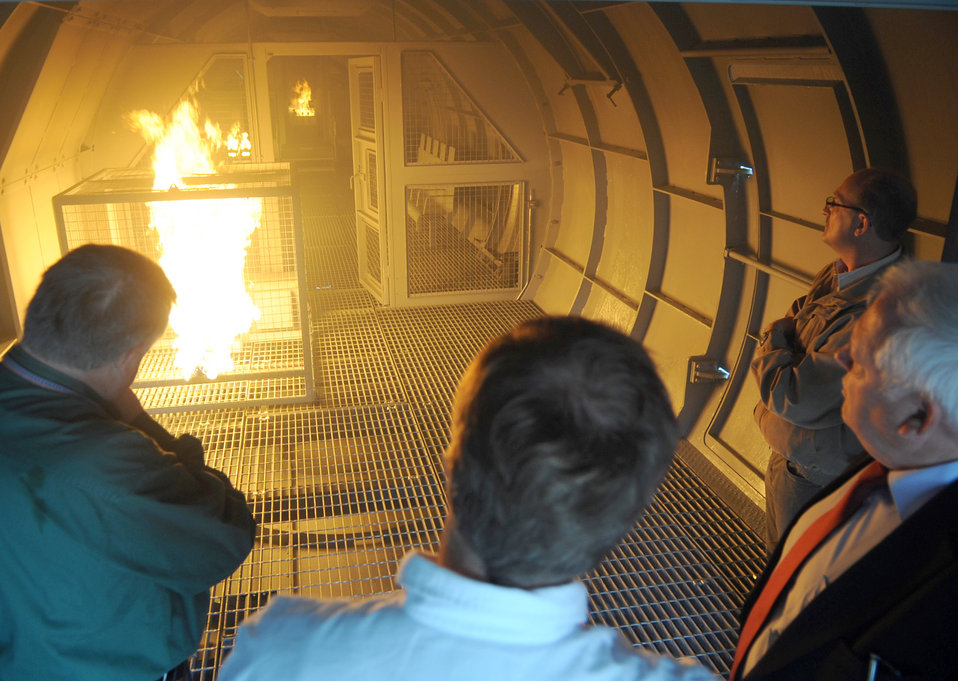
Aircraft Fire Training Site

Construction team members and fire trainers view a new aircraft fire training burn site Sept. 9, 2010 at Ramstein Air Base, Germany. The new burn site is the only aircraft training site in Germany and will help train in many aircraft scenarios.